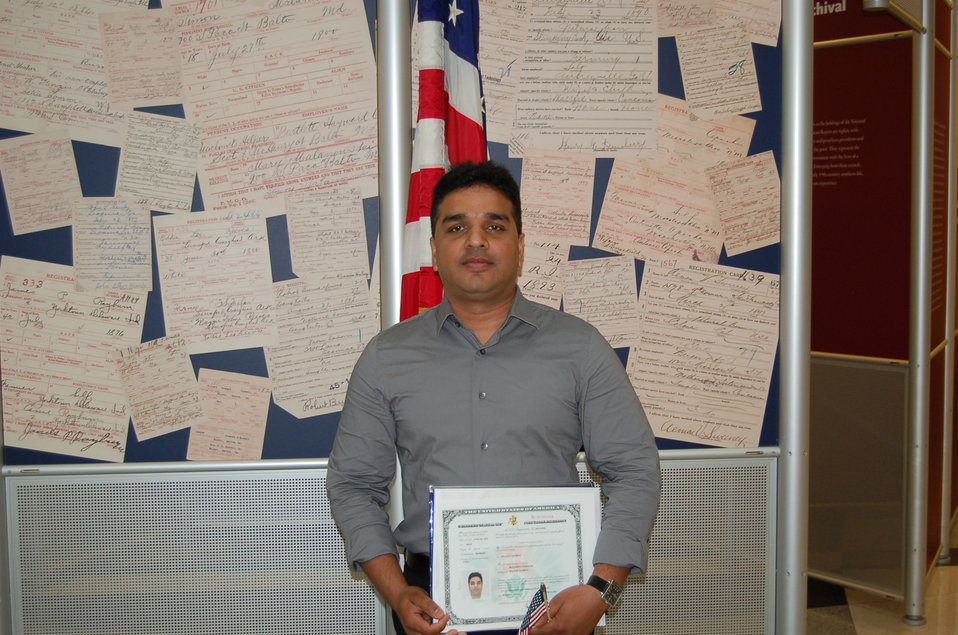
New Citizens